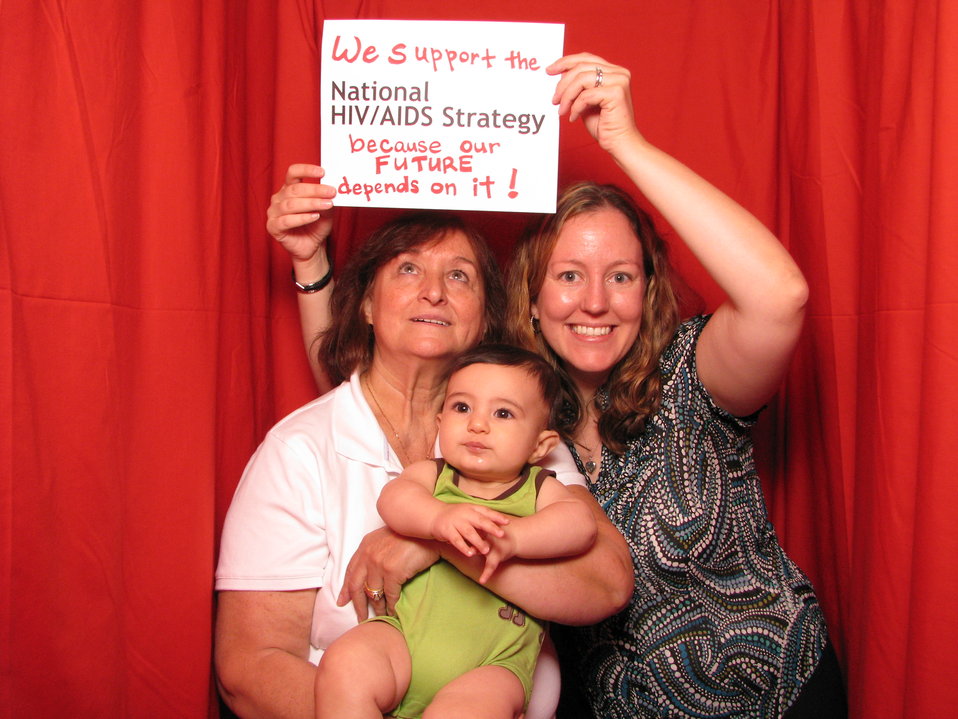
We support the National HIV/AIDS Strategy because Our FUTURE depends on It!

From the AIDS.gov photo booth at the U.S. Conference on AIDS, September 2010 (Orlando, FL).